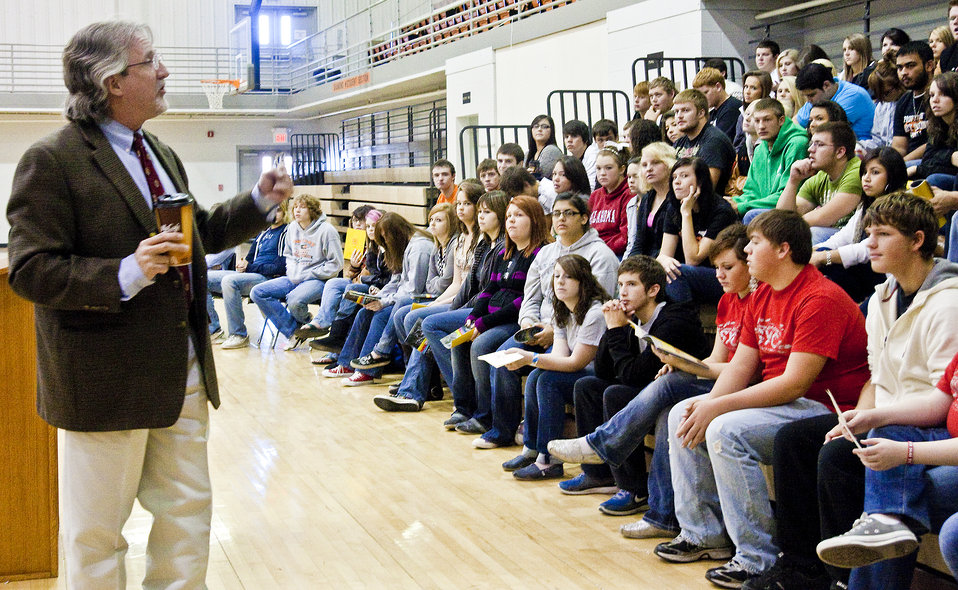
Sallisaw County Oklahoma Event

Teens in Sallisaw County Oklahoma listen to Michael Snowden, Oklahoma Bureau of Narcotics and Dangerous Drugs Agent-in-charge, during National Drug Facts Week. The event was planned by the Sallisaw Youth Coalition and the Community Anti-Drug Coalitions of America.